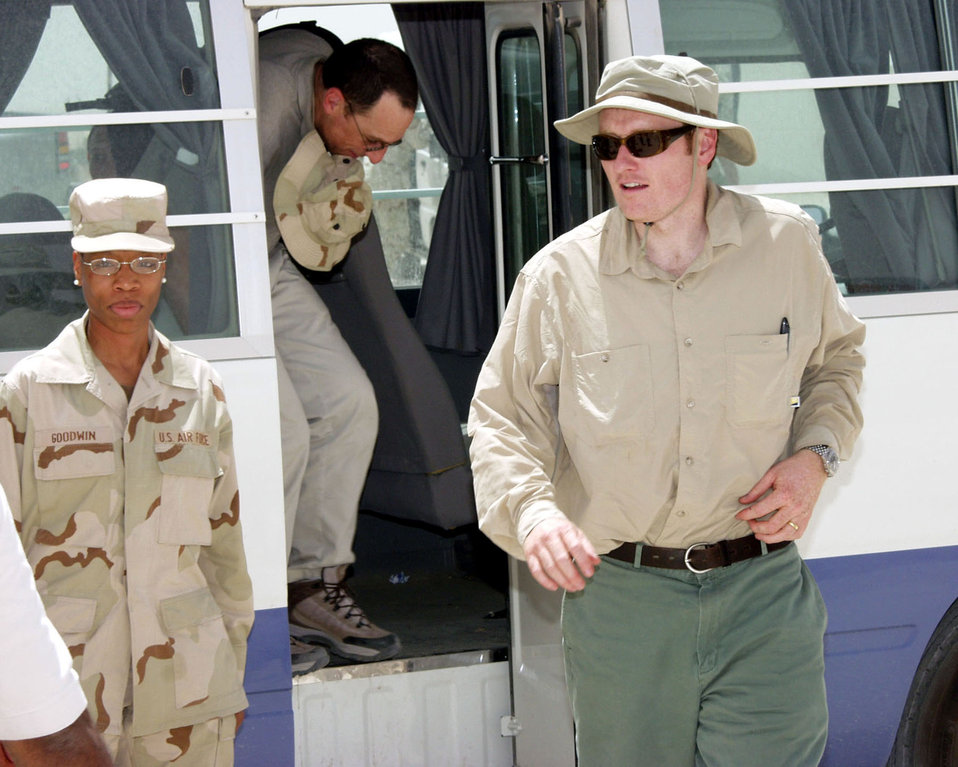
O'Brien tour

OPERATION IRAQI FREEDOM (AFPN) -- The host of NBC's